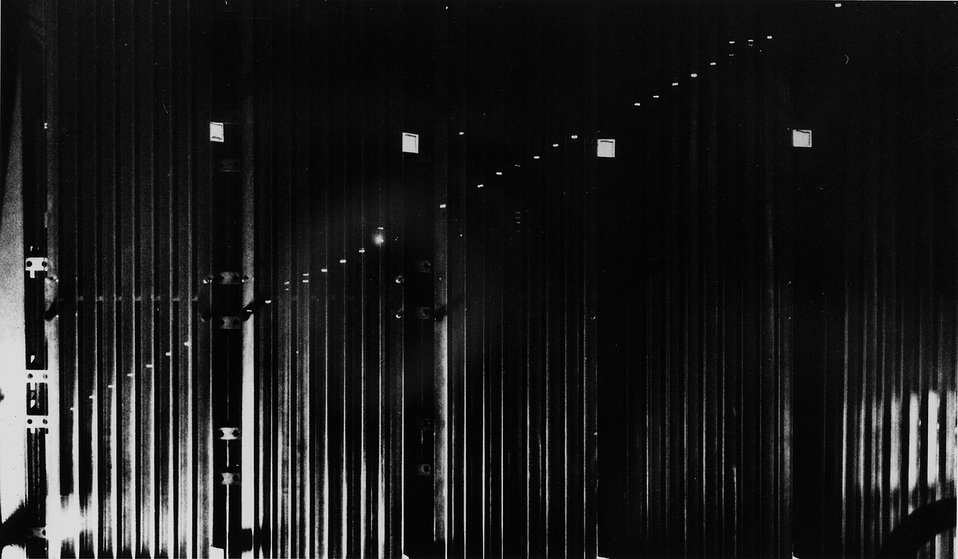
Track of a high energy cosmic ray (mu-meson) shown in the Columbia University spark chamber at the Alternating Gradient Synchrotron.